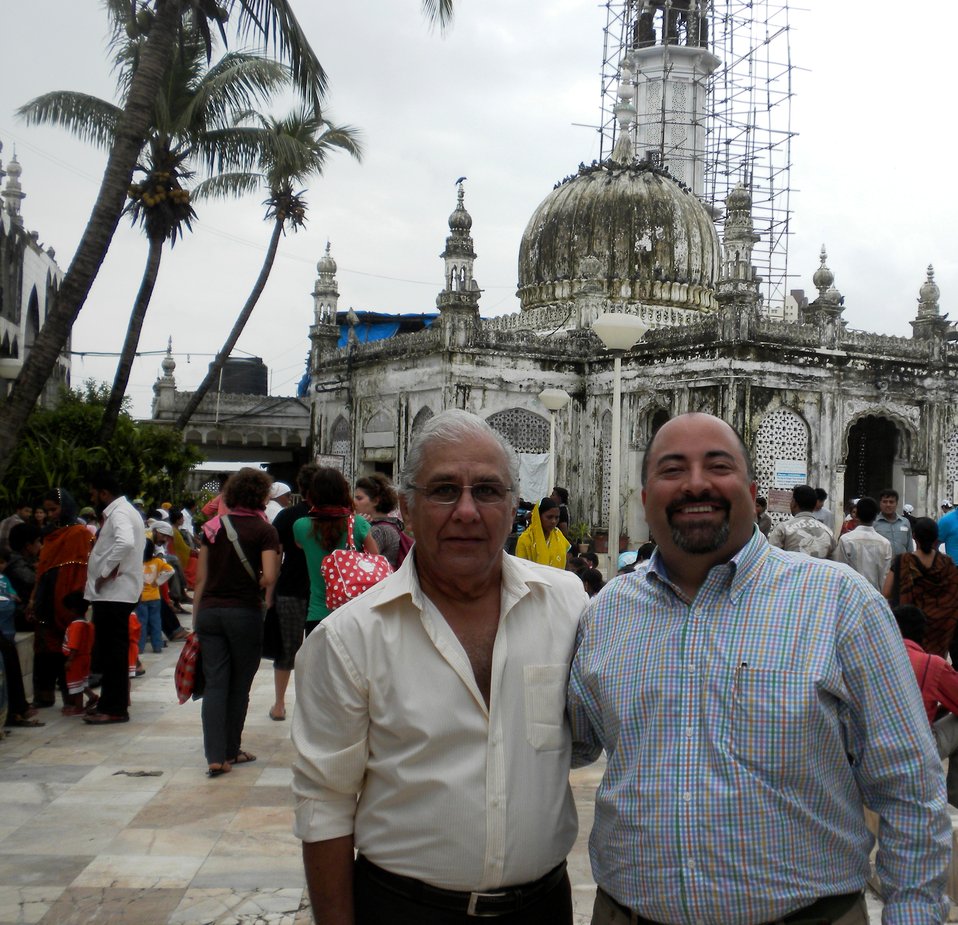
Acting Deputy Assistant Secretary Keshap Shares Photos from India and Nepal

U.S. Acting Deputy Assistant Secretary in the Bureau of South and Central Asian Affairs Atul Keshap shares photos from his August 2010 trip to India and Nepal.